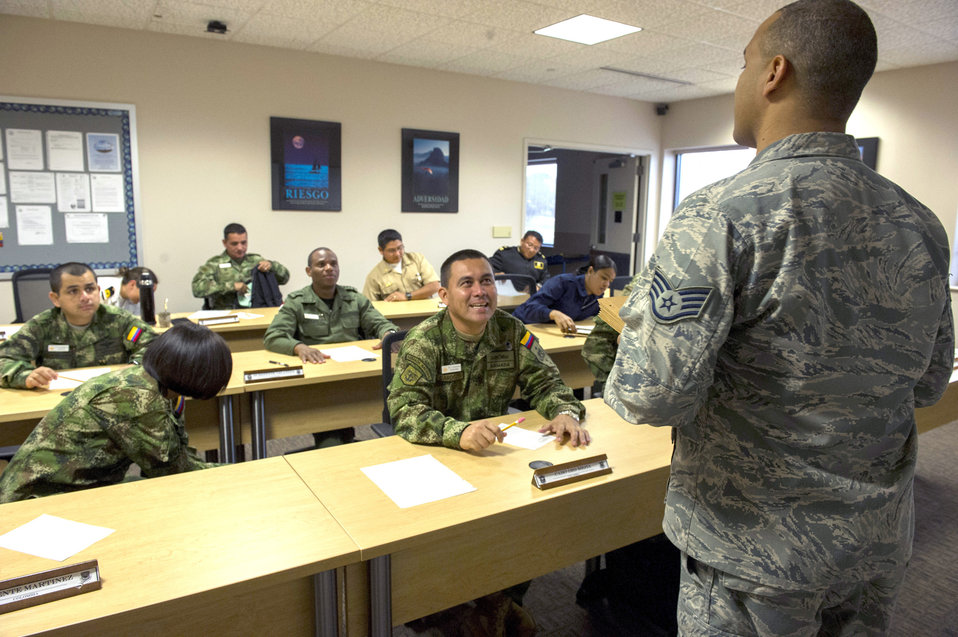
Inter-American Air Forces Academy

Staff Sgt. Jaime Torres, USAF instructor at the Inter-American Air Forces Academy, prepares students for their final exam in the International Logistics course, Joint Base San Antonio-Lackland, TX, Dec. 7, 2012. Thirteen partner nation students from Colombia, Dominican Republic, Panama, Ecuador, and Uruguay attended the International Logistics course during the last semester of 2012. The International Logistics course focuses on joint logistics principals, security cooperation and foreign military sales.